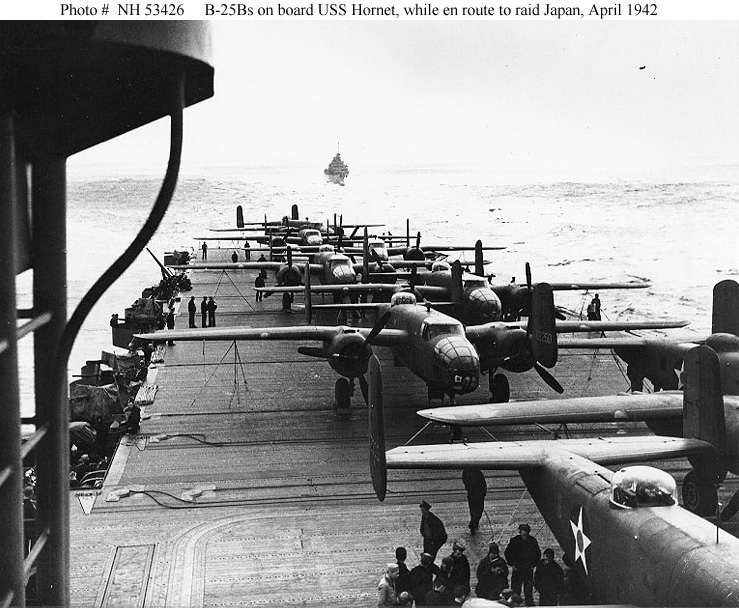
Doolittle Raid on Japan

USAAF B-25B bombers tied down on the flight deck of USS Hornet (CV-8), while the carrier was en route to the mission's launching point. The plane in the foreground is tail No. 40-2203 (mission plane No. 9). Partially visible at far right is tail No. 40-2250 (mission plane No. 10). Piloted respectively by 2nd Lts. Harold F. Watson and Richard O. Joyce, these B-25s attacked targets in the Tokyo area.